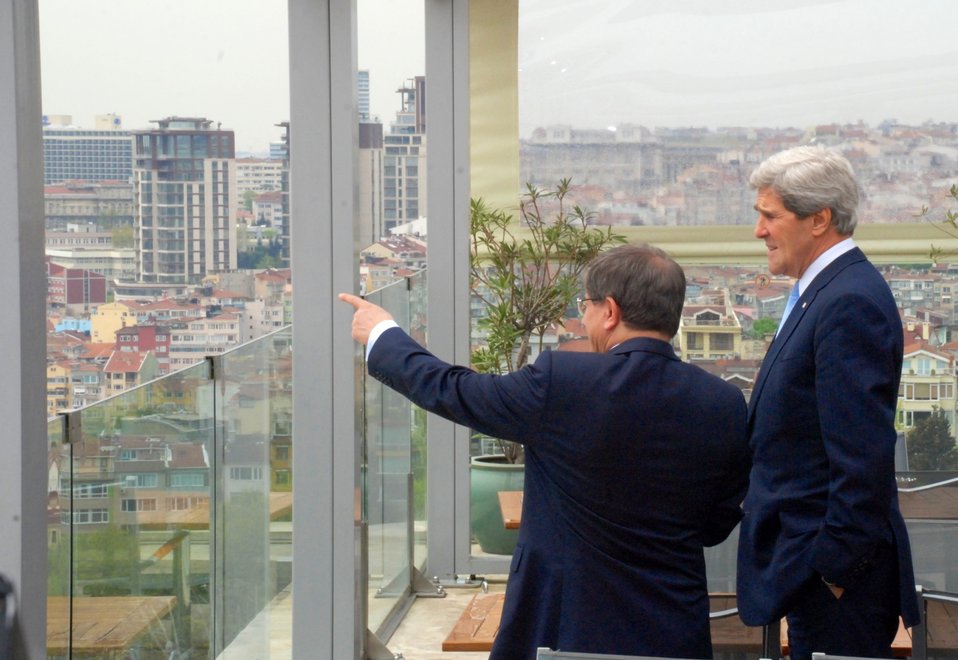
Secretary Kerry and Turkish Foreign Minister Davutoglu Enjoy the View From the Terrace of the Conrad Hotel

U.S. Secretary of State John Kerry and Turkish Foreign Minister Ahmet Davutoglu enjoy the view from the terrace of the Conrad Hotel in Istanbul, Turkey on April 21, 2013.